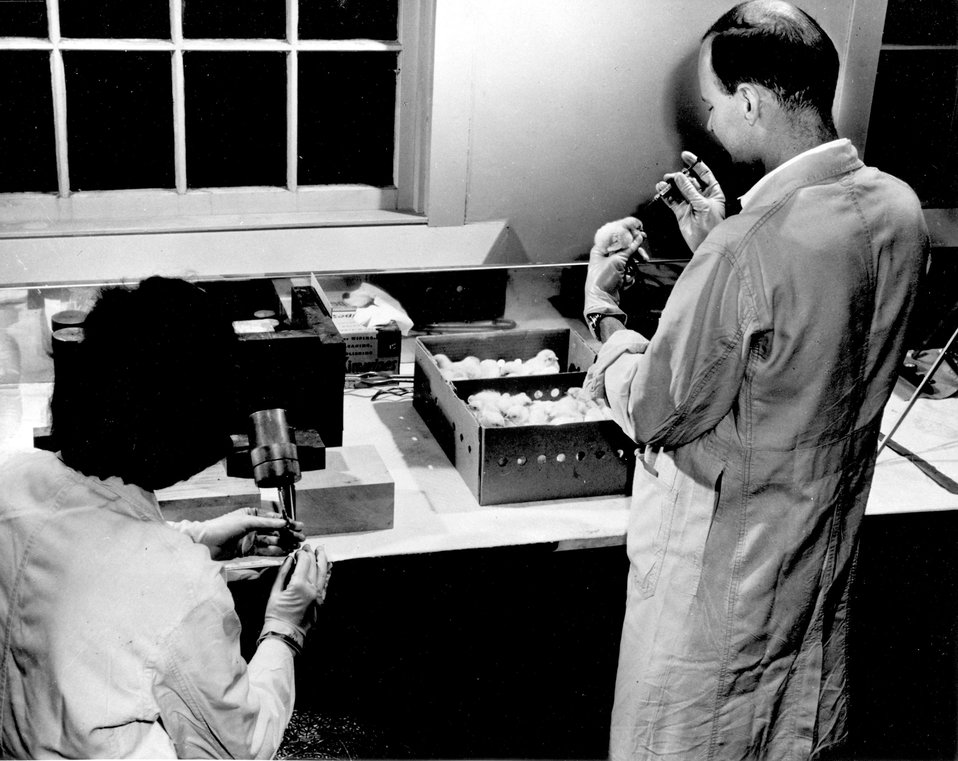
Chicks are used in studies of the role hormone plays in stimulating thyroid. The technician on the left is measuring out a specific amount of sodium iodide, containing radioactive iodine (I-131). c. 1954